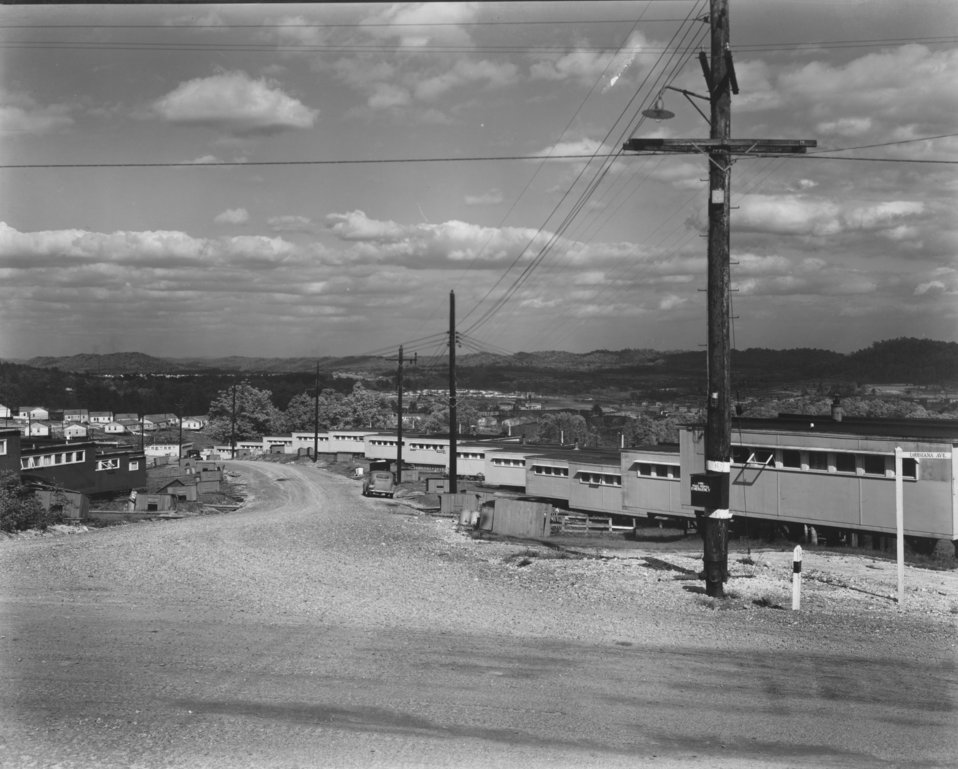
Housing at Oak Ridge